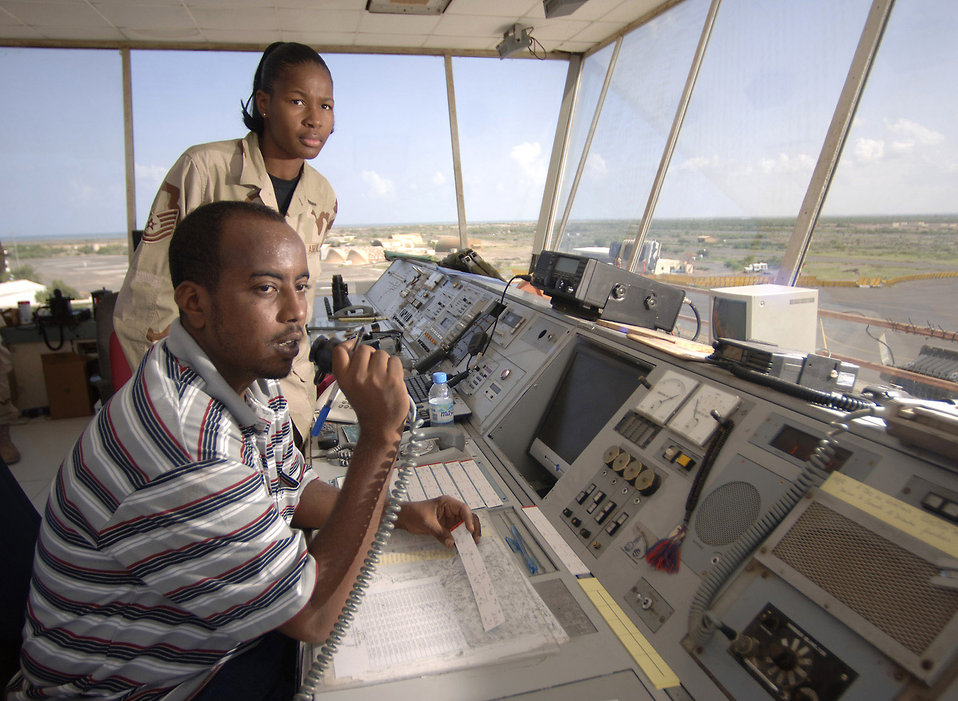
Airmen advise Djiboutian air traffic controllers

Tech. Sgt. Monique Whitaker works with Mahad Omar, a Djiboutian air traffic controller, on the upper level of the Djibouti Ambouli Tower where she and her Djiboutian counterparts help direct the arrival and departure of an average of 20 military sorties per day. Sergeant Whitaker is an air traffic control liaison assigned to Combined Joint Task Force-Horn of Africa at Camp Lemonier, Djibouti, from Spangdahlem Air Base, Germany.